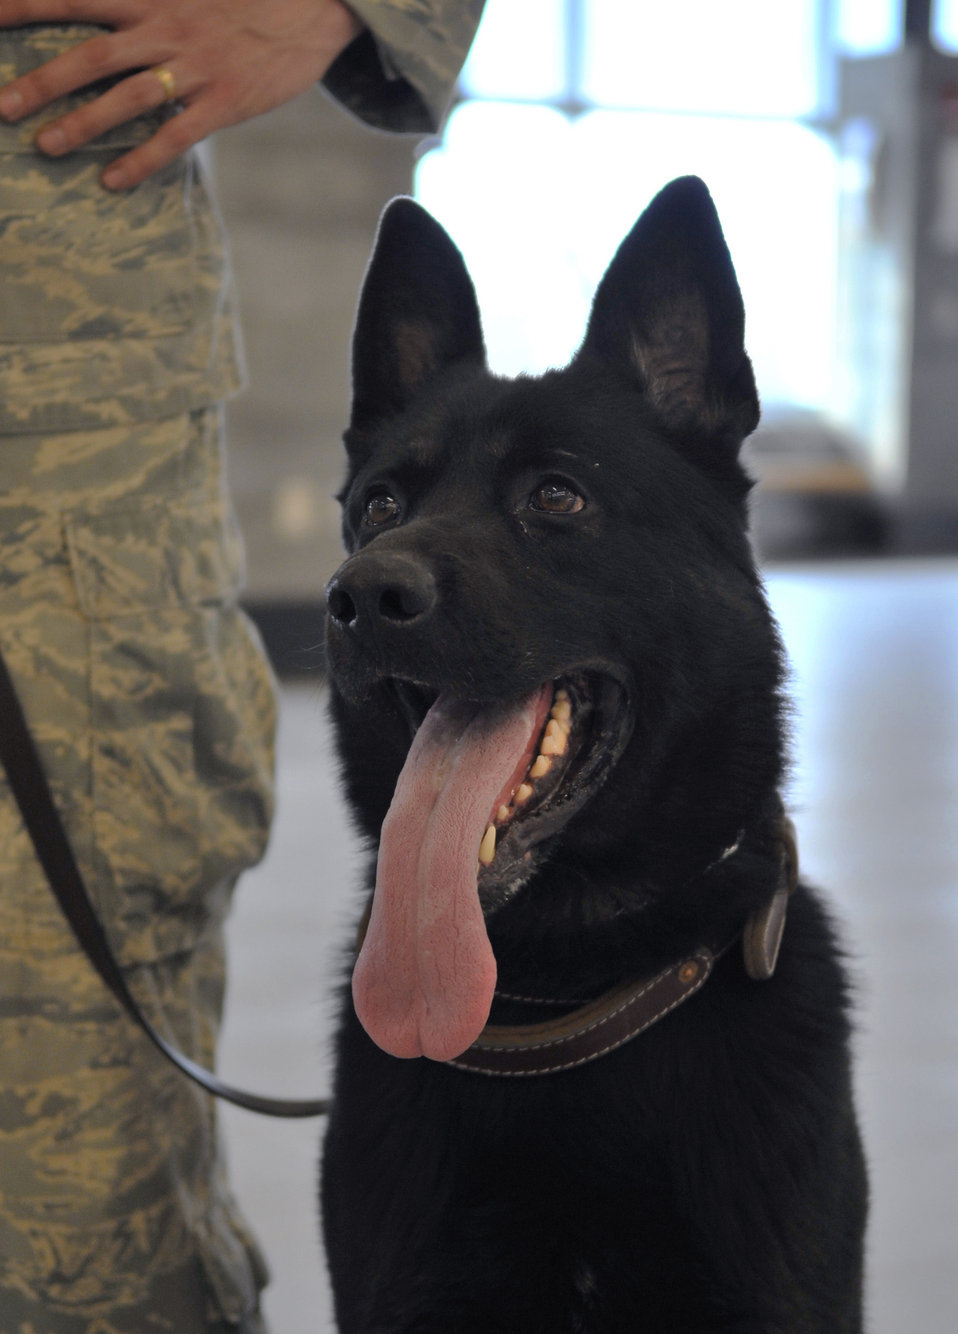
Working dog, EOD team partner to secure Alaska's interior

Benny, a military working dog, sits next to his handler, Staff Sgt. Robert Brown, after searching the new wing at the Fairbanks International Airport in Fairbanks, Alaska, for explosives May 5. The new wing opened to the public May 7. Sergeant Brown and Benny are a MWD team assigned to the 354th Security Forces Squadron, Eielson Air Force Base, Alaska.